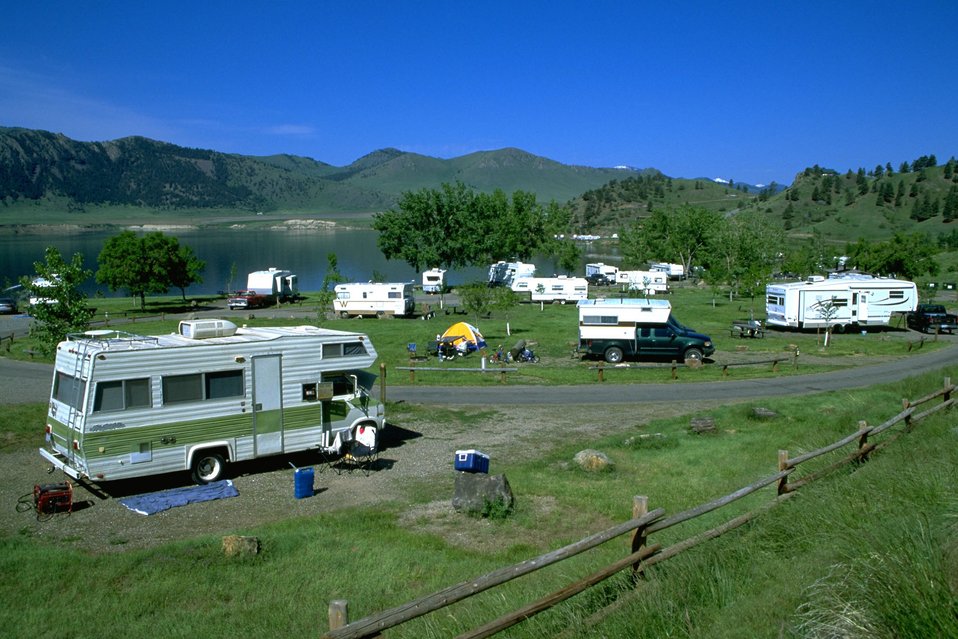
Camping at Holter Lake Campgrounds